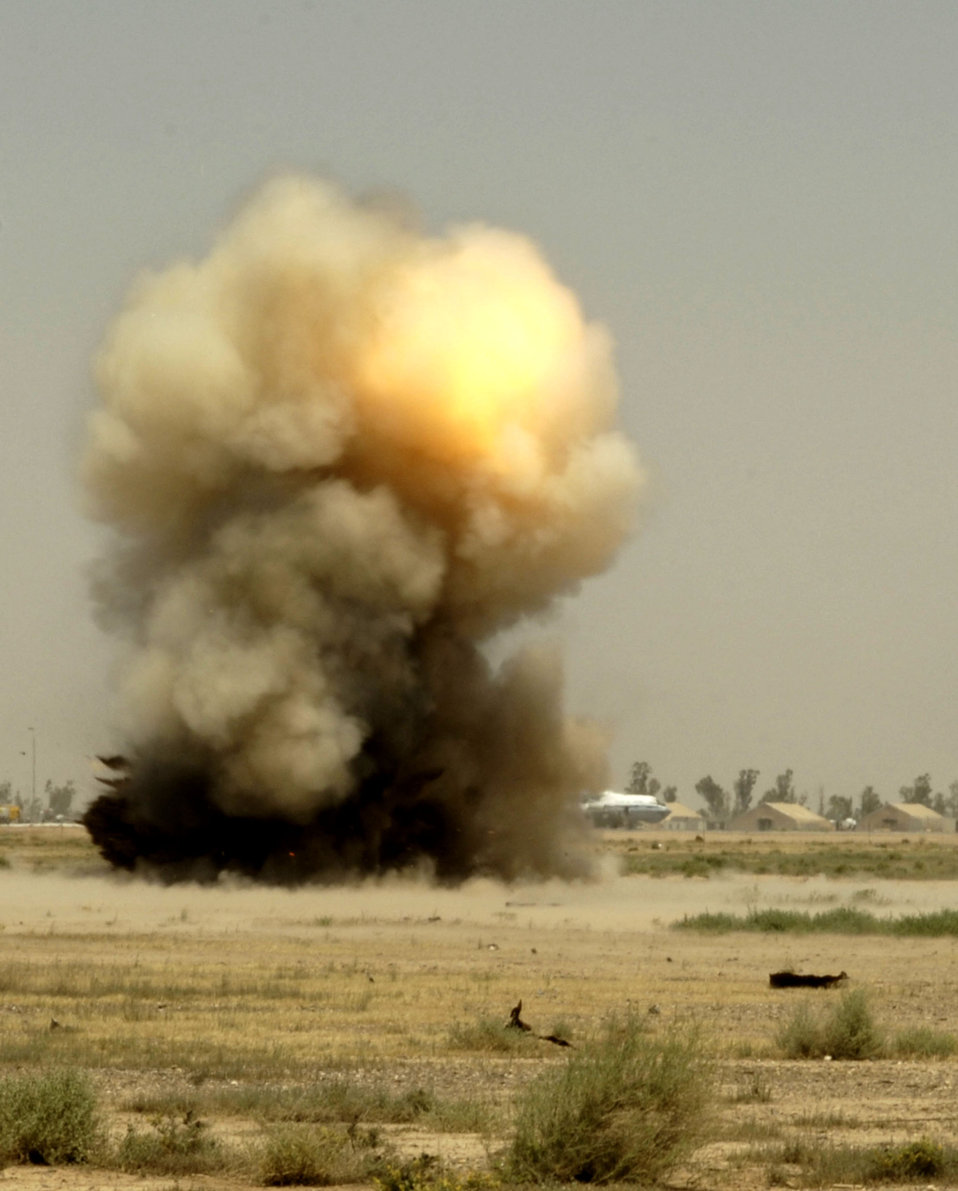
Controlled detonation

A controlled detonation explodes at Balad Air Base, Iraq, on Monday, May 22, 2006. Explosive ordnance disposal technicians from the 332nd Expeditionary Civil Engineer Squadron use the range when they find unexploded ordnance on base.